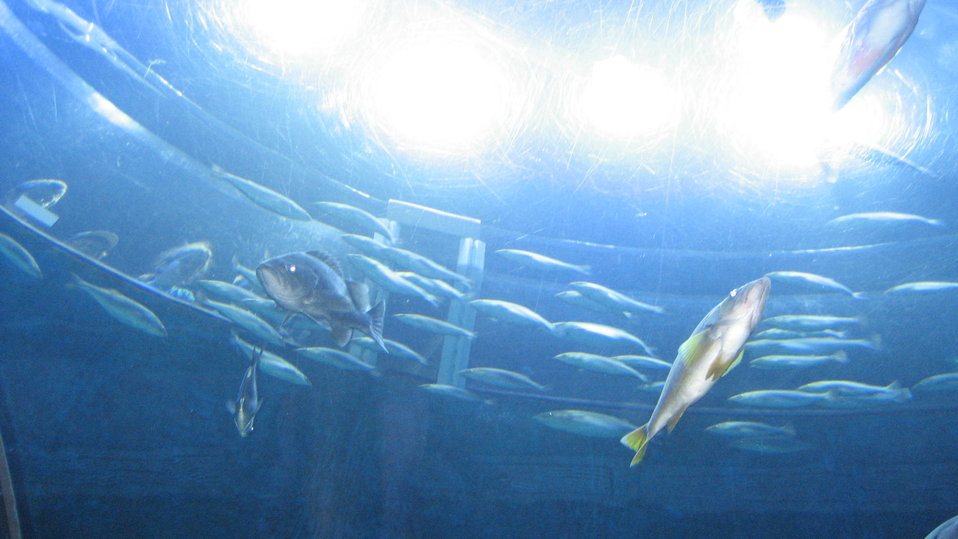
Parc Aquarium Du Quebec, Quebec City, Canada